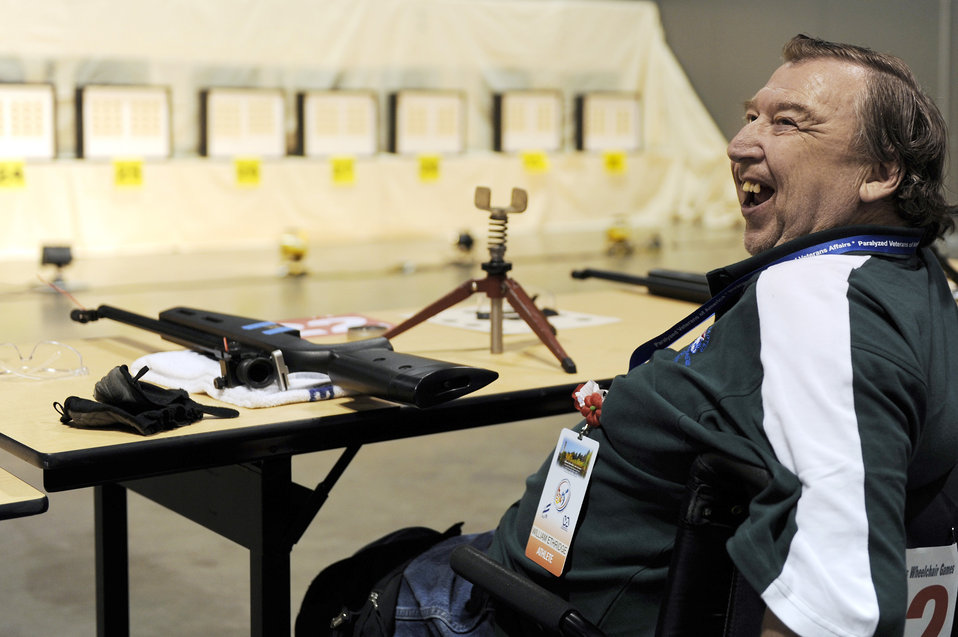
Wheelchair athletes participate in national veteran's competition

William Ethridge smiles as he competes in the air gun competition during the 29th National Veterans Wheelchair Games July 14 in Spokane, Wash. Mr. Ethridge is an Air Force veteran and resides in Spokane. The 29th National Veterans Wheelchair Games runs through July 19.